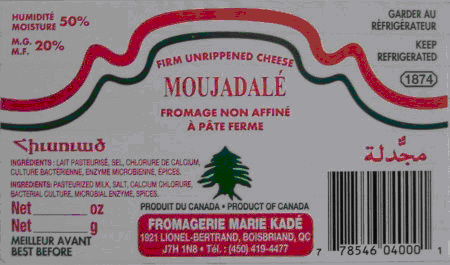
RECALLED - Cheese

December 29, 2011 - Consumer Alert for cheese and milk products due to Listeria monocytogenes contamination.